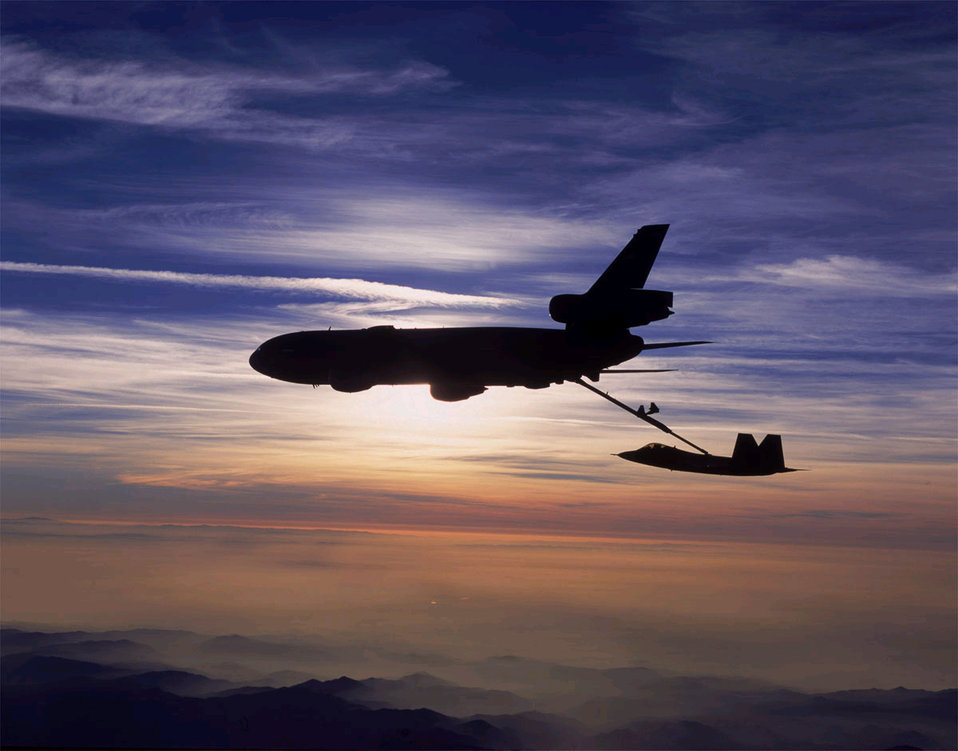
F-22 and beyond

FILE PHOTO -- A KC-10 Extender from Travis Air Force Base, Calif., refuels an F/A-22 Raptor. The Raptor is the replacement for the F-15 Eagle. It is the most advanced fighter aircraft in the world, combining a revolutionary leap in technology and capability with reduced support requirements and maintenance costs. The F/A-22's integrated avionics gives it first-look, first-shot, first-kill capability that guarantees U.S. air dominance for decades.